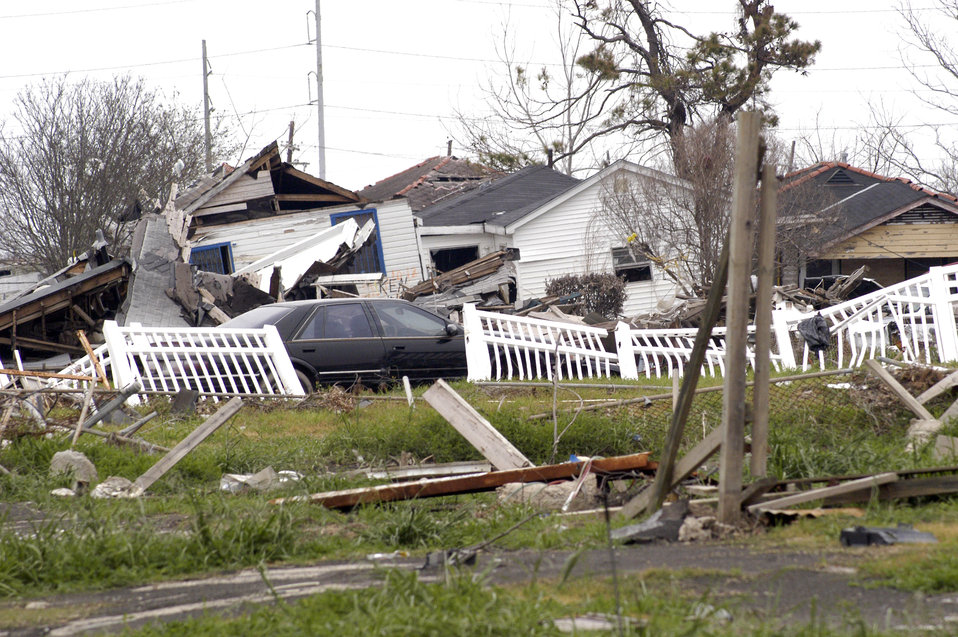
Houses were crushed and swept off their foundations by the flooding from a breached levee in the Ninth Ward, New Orleans, LA, due to the 20-foot storm surge from Hurricane Katrina that overwhelmed the flood control system. Katrina made landfall on Monday morning, August 29, 2005 as a Category 3 hurricane with sustained winds of 125 mph with over a 20-foot storm surge. Katrina caused catastrophic damage over 90 thousand square miles across Louisiana with an estimated $75 billion dollars in damage. The total economic impact to the Gulf Coast was estimated at over $150 billion. 80% of New Orleans, LA, was underwater with some areas more than 20 feet deep. Less than a month later southern Louisiana was struck by a second Category 3 hurricane Rita inflicting more damage in the southwestern areas of Louisiana adding an addition $12 billion worth of damage to the already beleaguered state. The U.S. Army Corps of Engineers (USACE) under the auspices of Federal Emergency Management Agency (FEMA) was the lead service in providing assistance to the citizens of Louisiana. The U.S. Department of Agriculture (USDA) supplied emergency food aid, emergency loan assistance to farmers and home owners, and USDA personnel from around the nation volunteered their time and muscle to aid in the recovery operations.